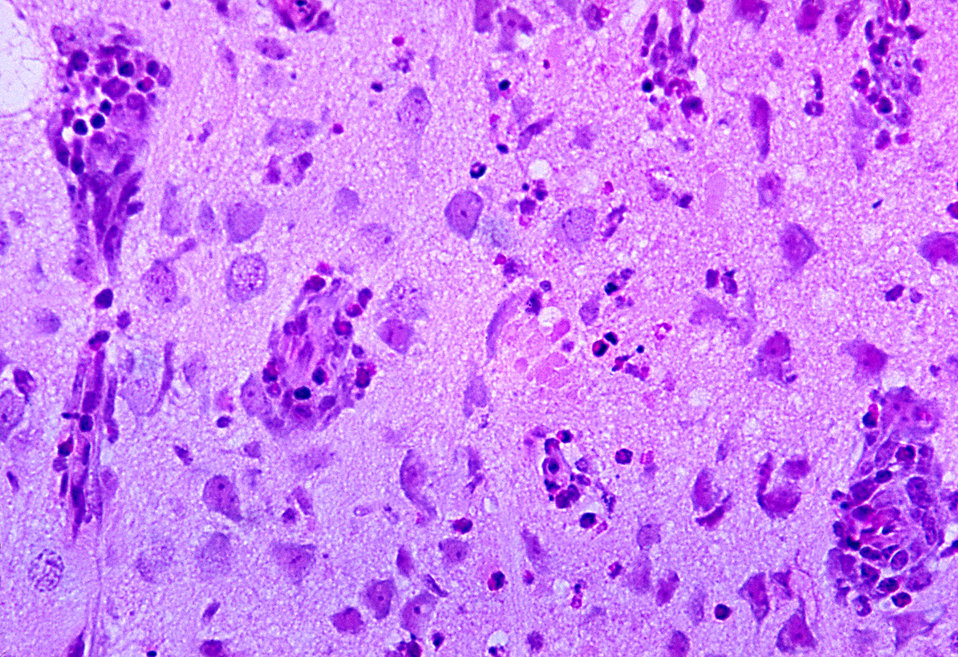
This photomicrograph reveals the histopathologic changes in a case of encephalitis due to the Tamiami virus.